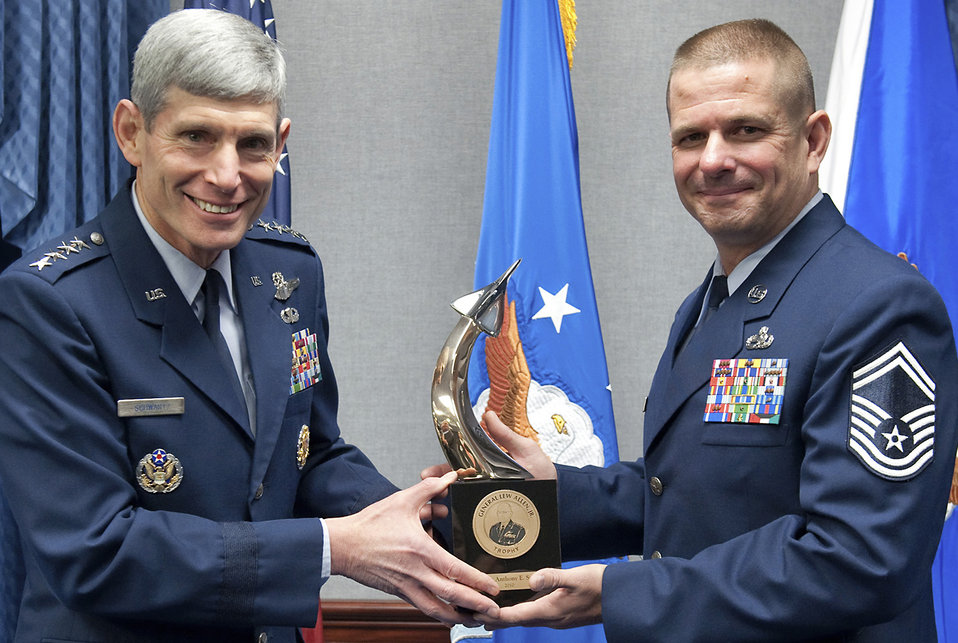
2010 General Lew Allen Jr.trophy

Air Force Chief of Staff Gen. Norton Schwartz presents the 2010 General Lew Allen Jr. Award to Senior Master Sgt. Anthony Smith during a ceremony Jan. 4, 2011, in the Pentagon. The award is presented annually to an officer and to an NCO working in aircraft, munitions or missile maintenance and directly involved in aircraft sortie generation. The award's namesake served as the Air Force Chief of Staff from 1978 to 1982. Sergeant Smith was honored for his work as the 57th Aircraft Maintenance Squadron Viper Aircraft Maintenance Unit superintendent at Nellis Air Force Base, Nev.